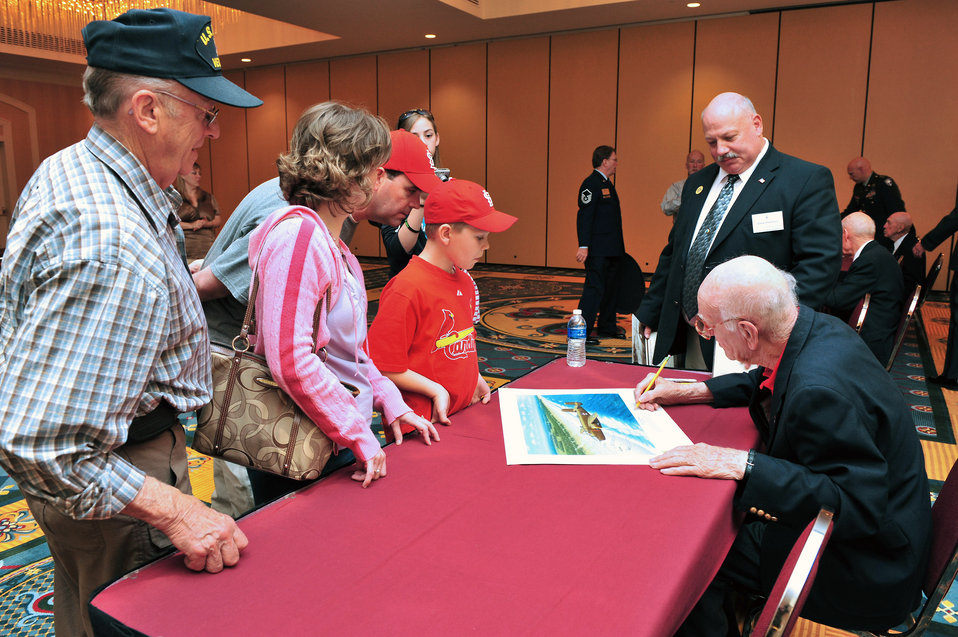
Thousands honor Doolittle Raiders at the 67th Reunion

Thomas Griffin, a Doolittle Raider, signs autographs after a luncheon April 17 in Columbia, S.C., during the 67th Doolittle Raider reunion. Mr. Griffin was a navigator for crew no. 9. In 1943, he was shot down over Germany and captured and held prisoner until April 1945.